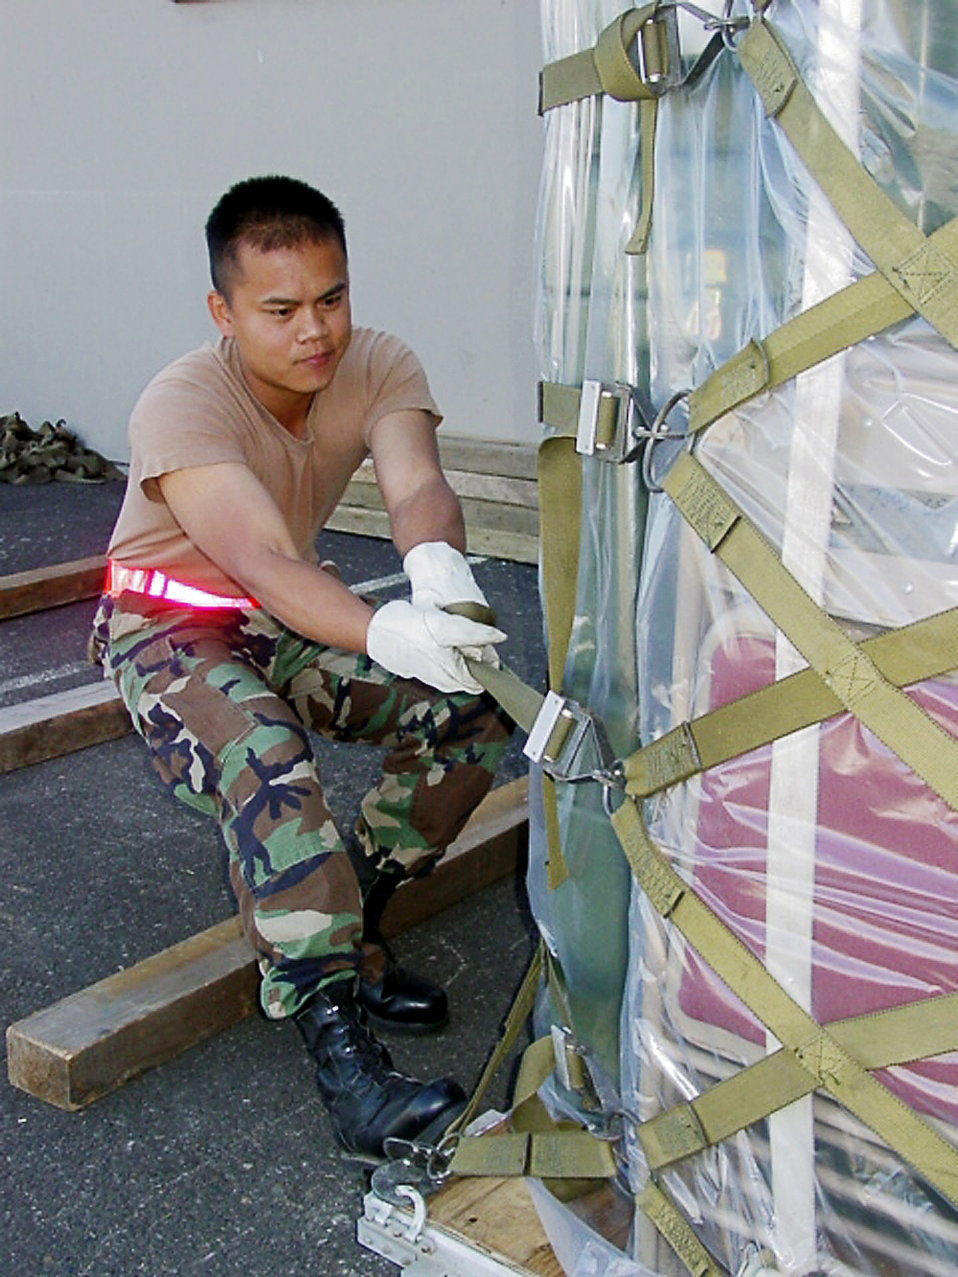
PORTLAND INTERNATIONAL AIRPORT, Ore. -- Tech. Sgt. Tuan Nguyen pulls tight on the cargo netting of a pallet of equipment to be airlifted to Louisiana for the Oregon Army National Guard. Air Force reservists with the 939th Air Refueling Wing here are providing around-the-clock support to airlift the Soldiers. Sergeant Nguyen is assigned to the 83rd Aerial Port Squadron.